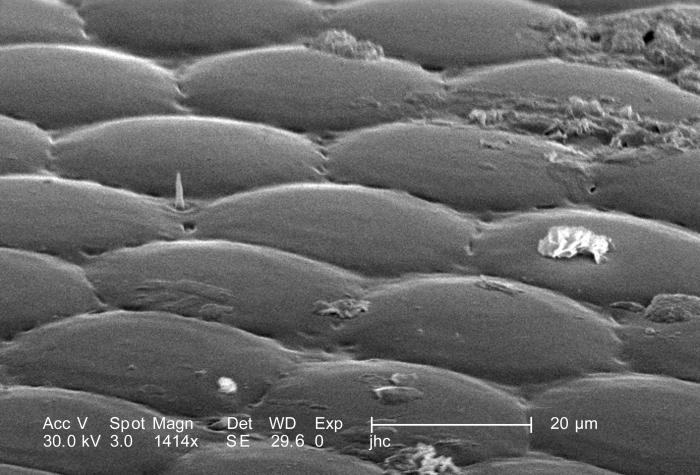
Under a high magnification of 1414X, this scanning electron micrograph (SEM) depicted the compound eye morphology of a captured insect suspected to be an ant. The ant was caught in a tangled cocoon of a brown recluse spider's, Loxesceles reclusa, web, and seen here was the surface of one of its two compound eyes.